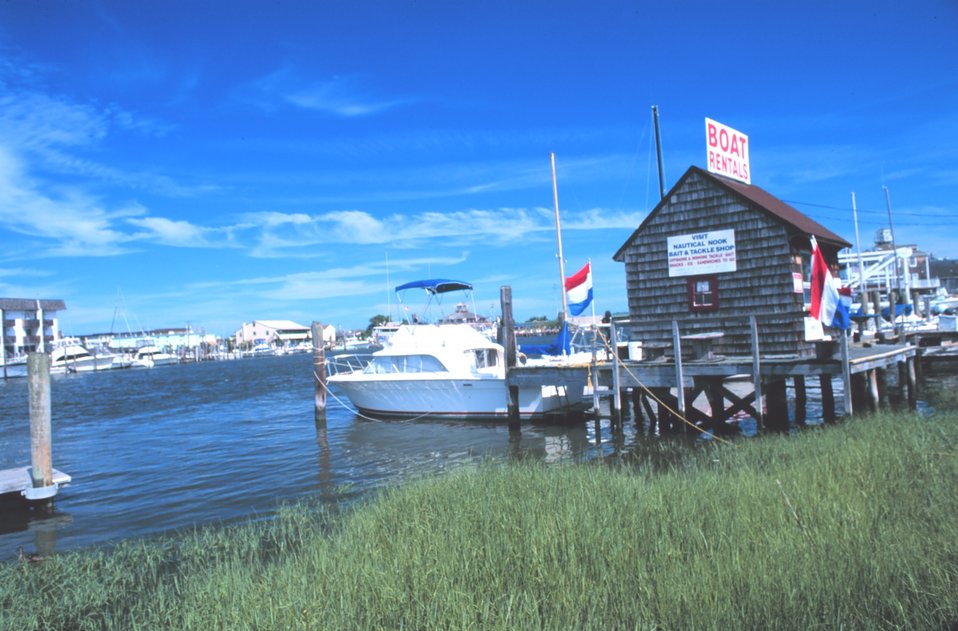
A water side bait, tackle and boat rental shop at Lewes